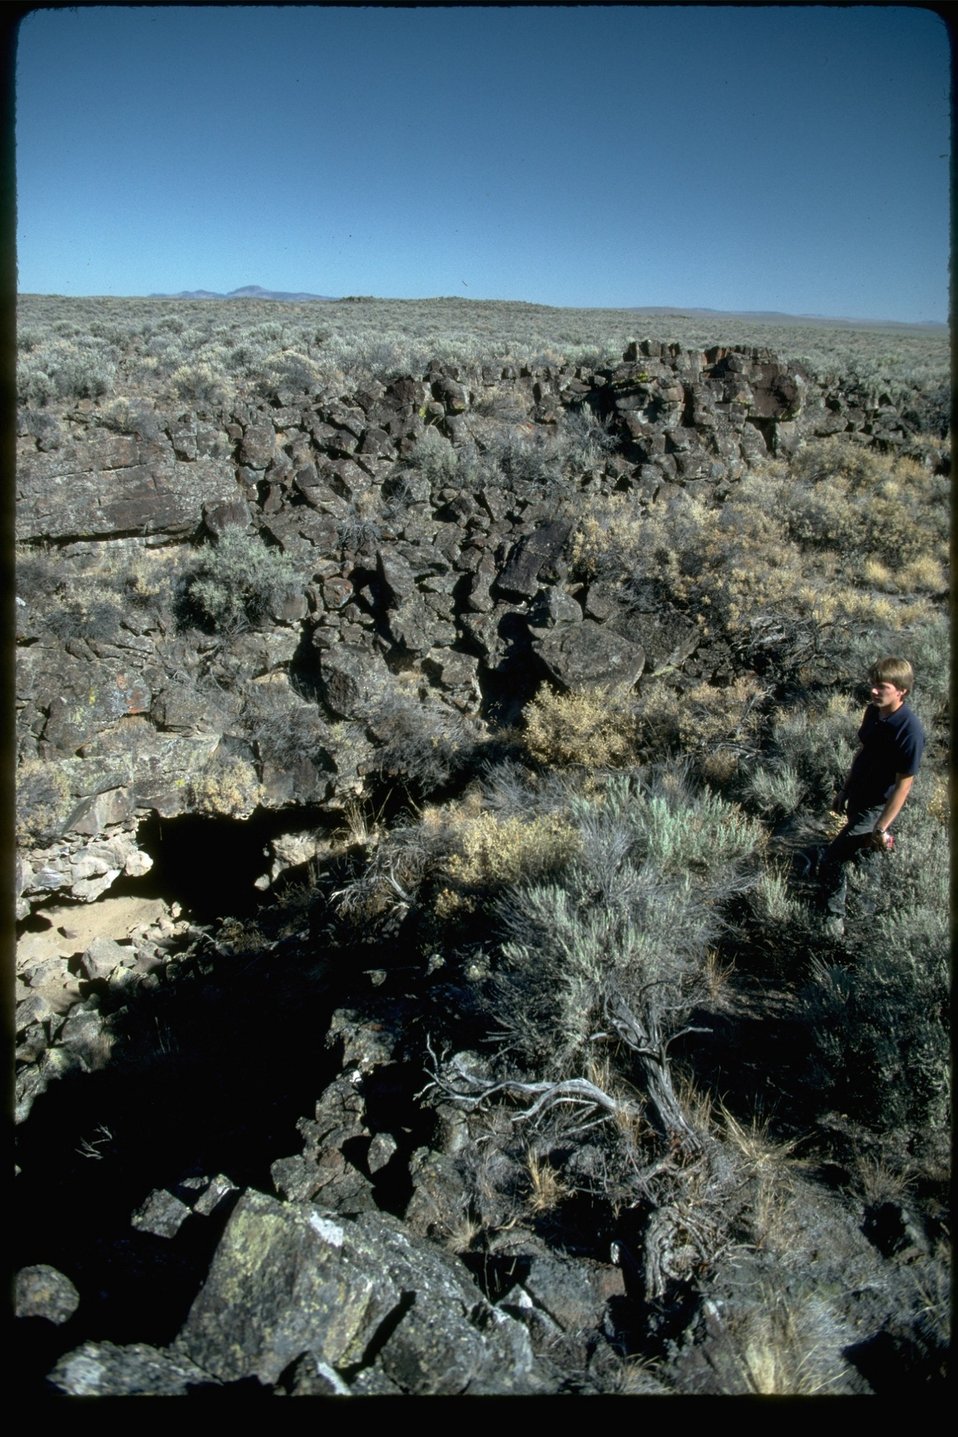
Lava tube cave in the Saddle Butte Wilderness Study Area. OR 3-111